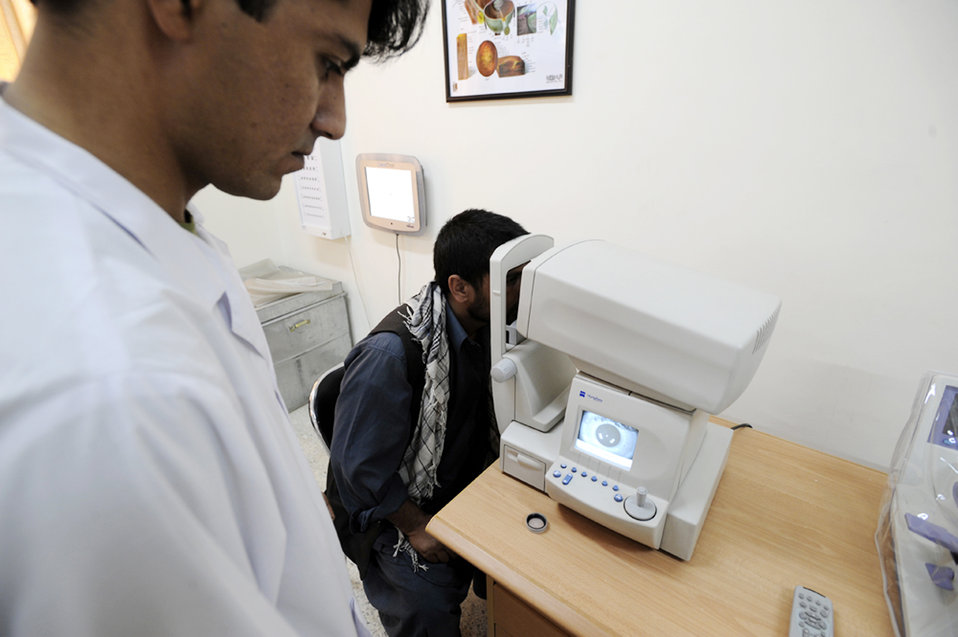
Airmen advise Afghan medical mission

A recruit for the Afghan national army has his vision screened during medical inprocessing Aug 2,2009 at the Kabul Military Training Center in Afghanistan. The medical screening process consists of a drug urinalysis, physical screening and eye exam.